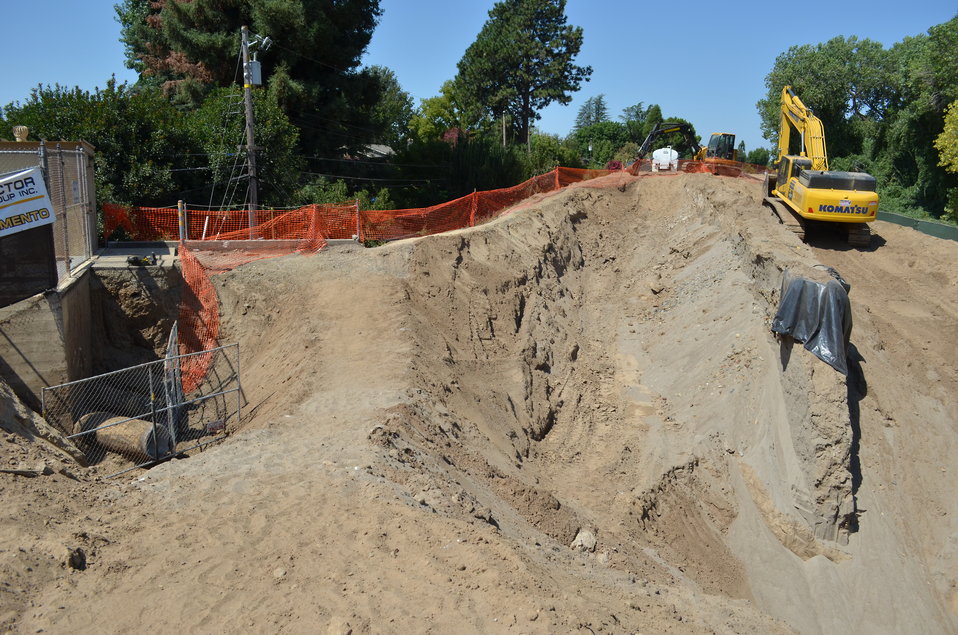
American River seepage wall partially exposed

A seepage wall in an American River is partially exposed Aug. 21, 2013 near the River Park neighborhood of Sacramento, Calif. The U.S. Army Corps of Engineers Sacramento District will elevate and replace a sump station's piping (far left) that prevented the wall's completion more than a decade ago. The district built more than 20 miles of seepage cutoff walls into American River levees between 2000 and 2002, but work was set aside for later where construction was complicated by encroachments like utilities, power lines, bridges and sump stations.